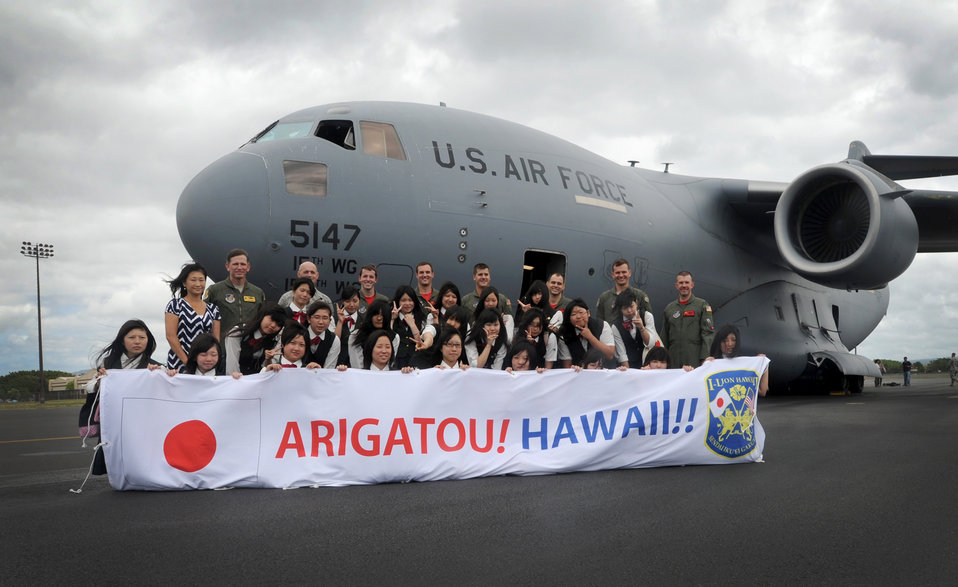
Japanese students visit Hickam

High school students from Sendai ,Japan, pose for a photo in front of a C-17 Globemaster III during a base tour June 24, 2011, at Joint Base Pearl Harbor-Hickam. The students are from Sendai Ikuei Gakuen High School in Japan and are continuing their education in Hawaii while their homes and school are being rebuilt. The students came to Joint Base Pearl Harbor-Hickam to tour the base and meet the C-17 crew who flew to Sendai following the earthquake and tsunami.